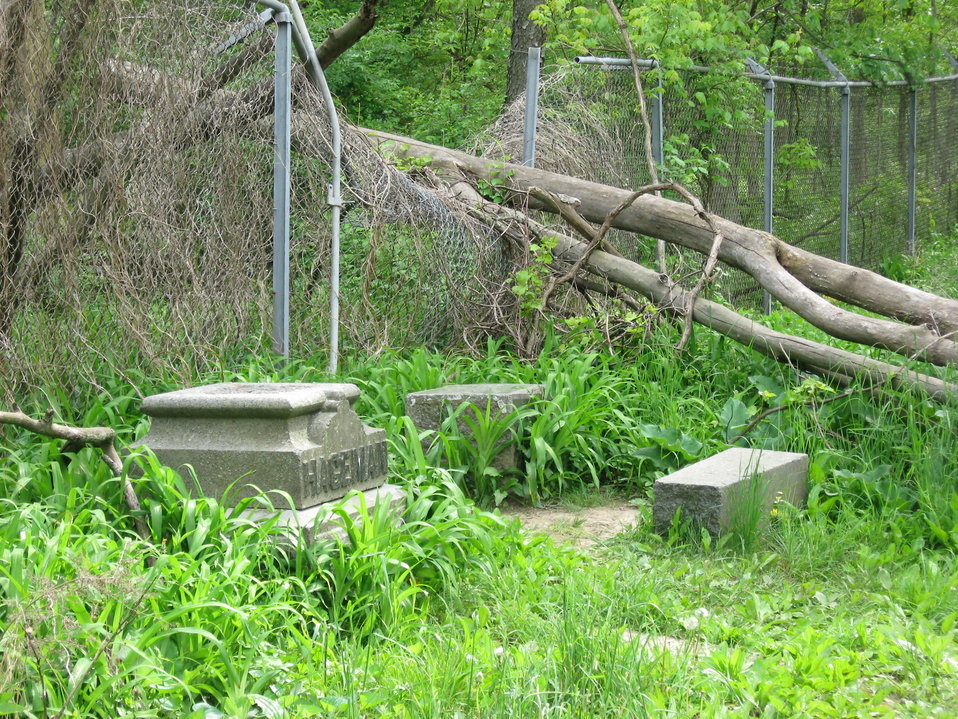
Bachelors Grove: fence damaged by fallen tree